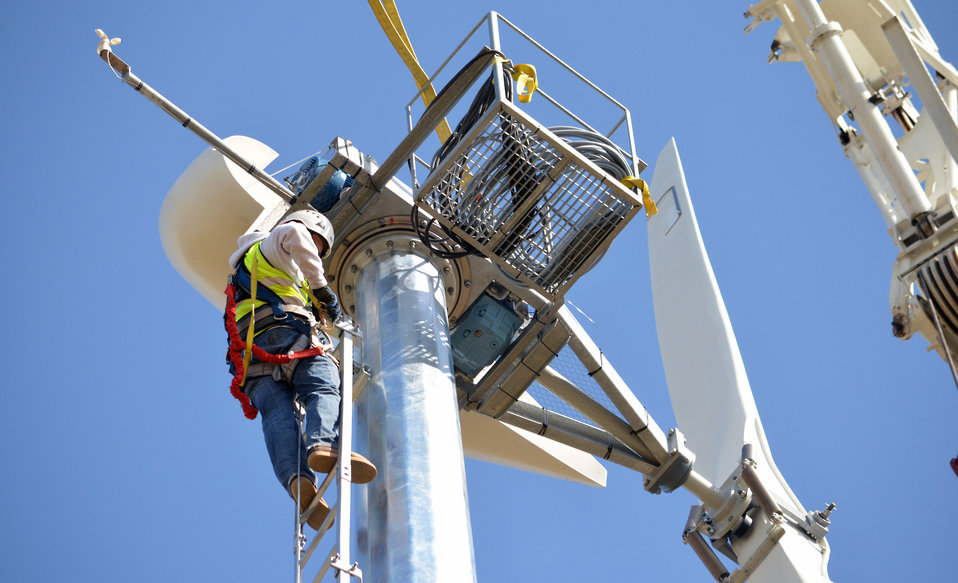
High adjustments

A contractor makes adjustments to the wind turbine 120 feet above Buckhorn Recreation Area at Black Butte Lake, a U.S. Army Corps of Engineers Sacramento District park, near Orland, Calif. Installation of the turbine atop the pylon took place March 13, 2013. Expected to go online within 30 days, the turbine can generate 11 kilowatts of energy to help supply the needs of campers at Black Butte Lake.